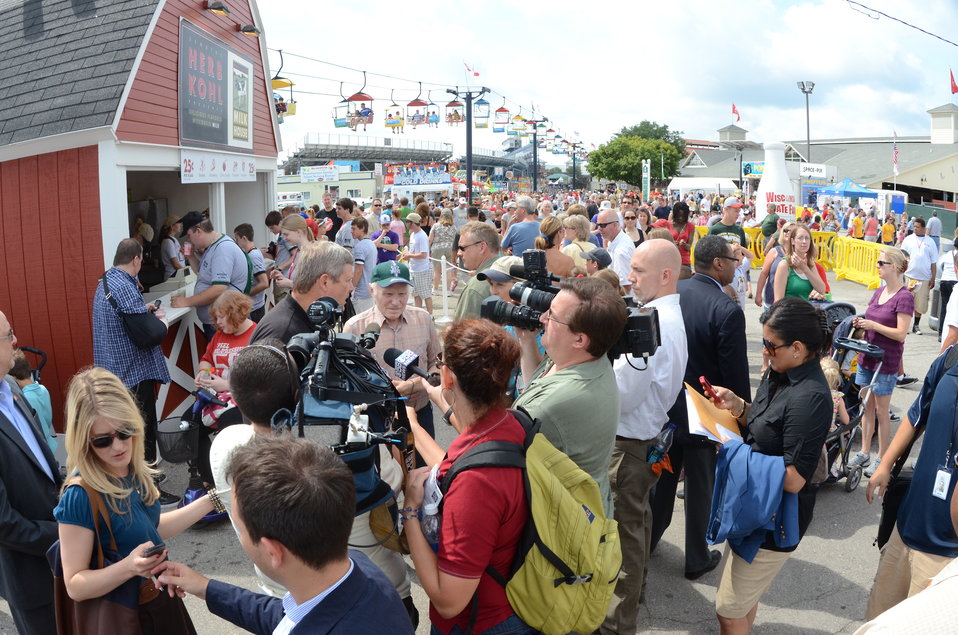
Agriculture Secretary Tom Vilsack speaking with the press aat the Wisconsin State Fair in West Allis, WI, on Thursday, August 4, 2011, USDA Photo by Lance Cheung.